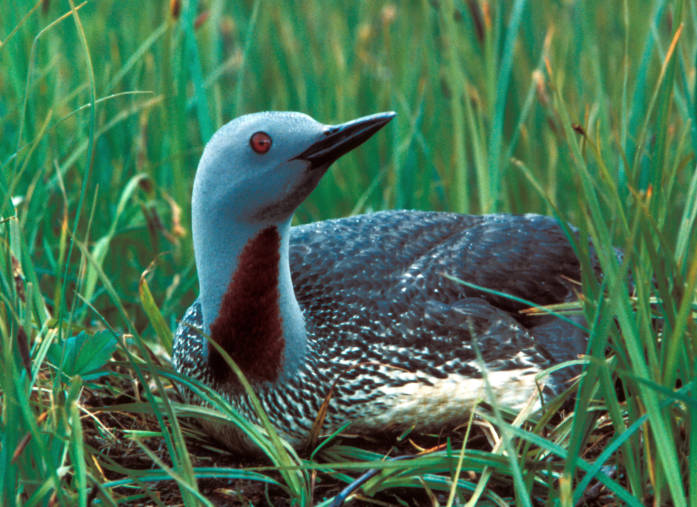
red-throated loon

Alaska Maritime National Wildlife Refuge